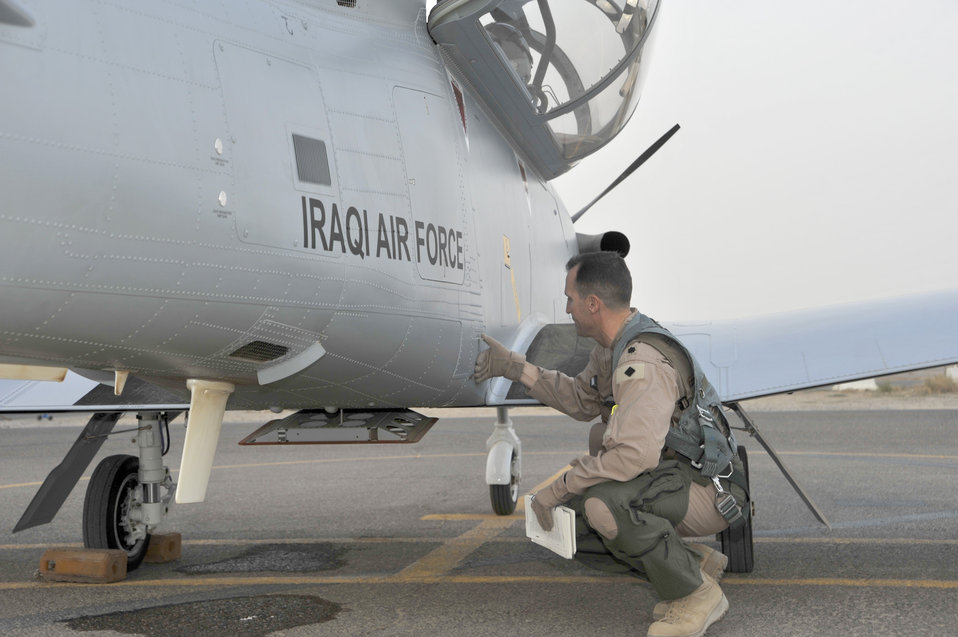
Iraqi air force pilots train with T-6A

Lt. Col. Charles Stevens performs a pre-flight inspection before a training flight with an Iraqi air force student pilot Sept. 26, 2010, at Tikrit Air Base, Iraq. U.S. Air Force instructor pilots are training and advising the first group of Iraqi air force instructor pilots on the T-6A Texan II. Colonel Stevens is the 52nd Expeditionary Flying Training Squadron commander.